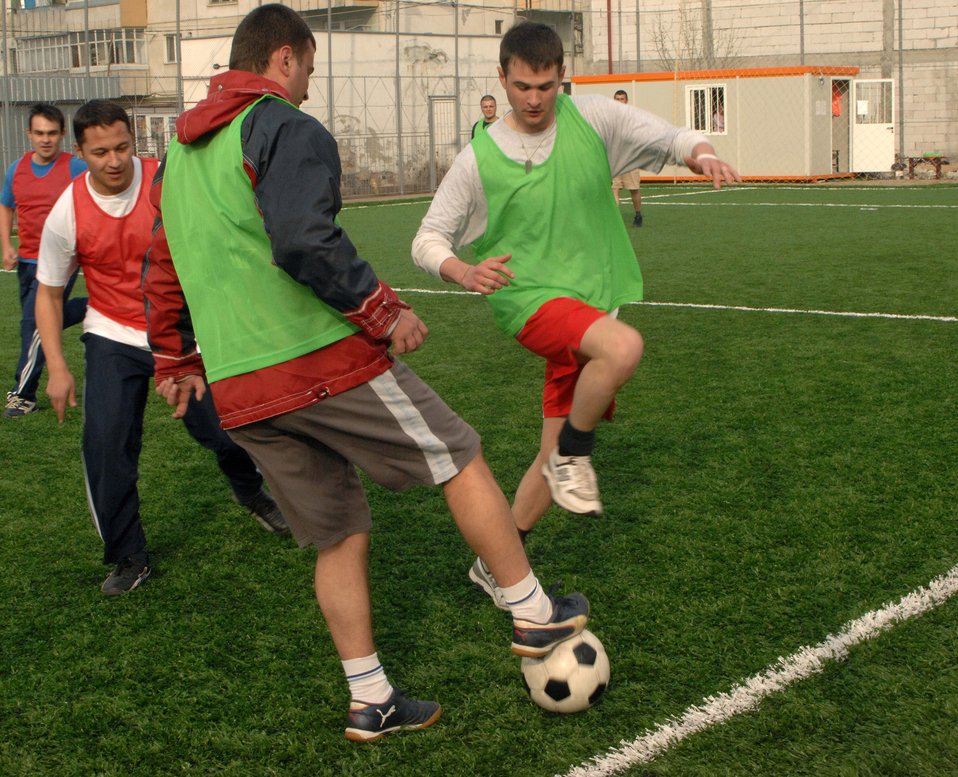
U.S., Romanian airmen break cultural barriers with sports

American Airmen members play soccer with Romanian airmen March 29 at Campia Turzii, Romania. The Airmen are deployed as part of the U.S. military's support to the NATO summit. U.S. Airmen augmented NATO and Romanian forces, ensuring the security of the airspace above Bucharest.